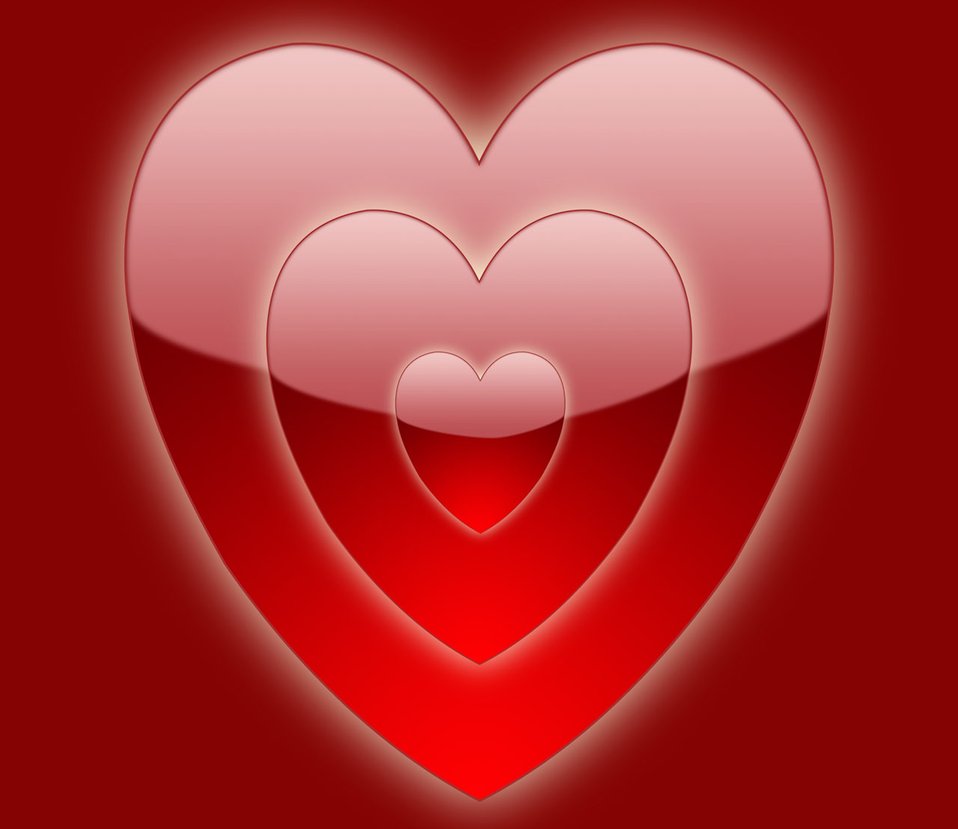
Heart

Three glass hearts.